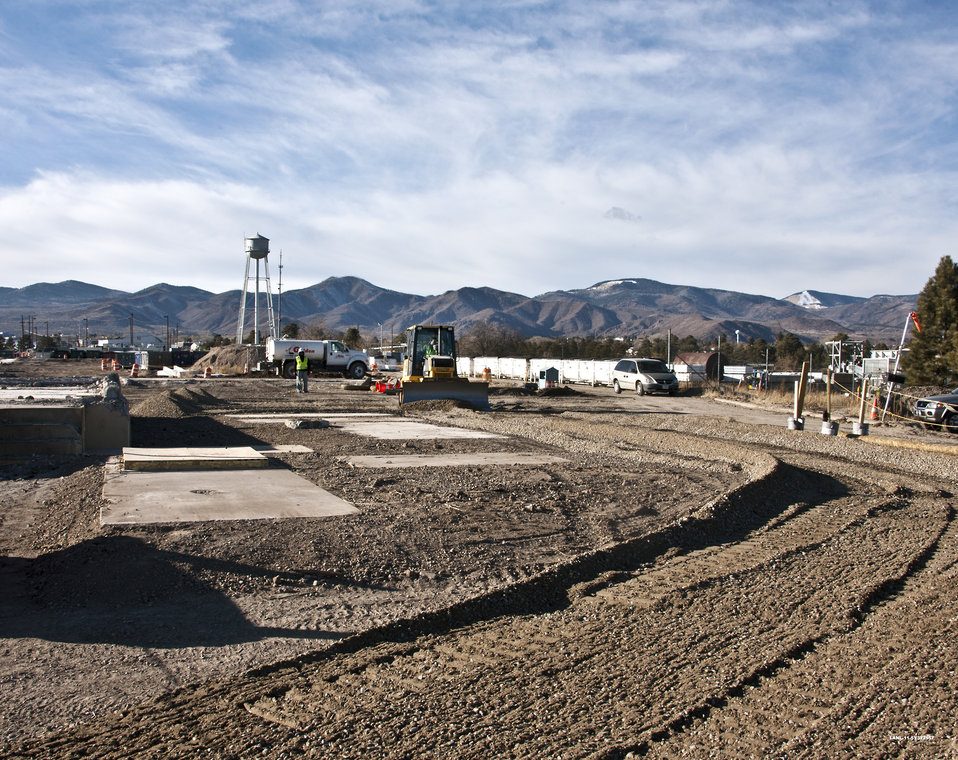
A Safe End to Cold War Facilities

Once the site of the world’s first plutonium processing facility, the buildings at DP West were demolished to grade.